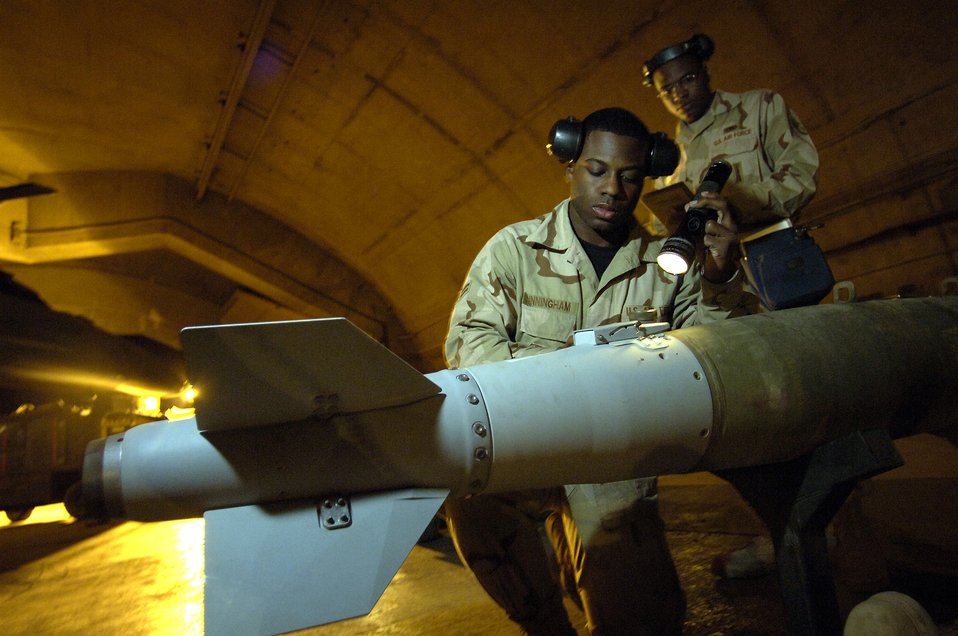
Arming the Falcons for fight

Staff Sgt. Christopher Curry and Airman 1st Class Brandon Cunningham prepare to load munitions on an F-16 Fighting Falcon March 4 at Balad Air Base, Iraq. The Airmen are assigned to the 332nd Expeditionary Aircraft Maintenance Squadron.